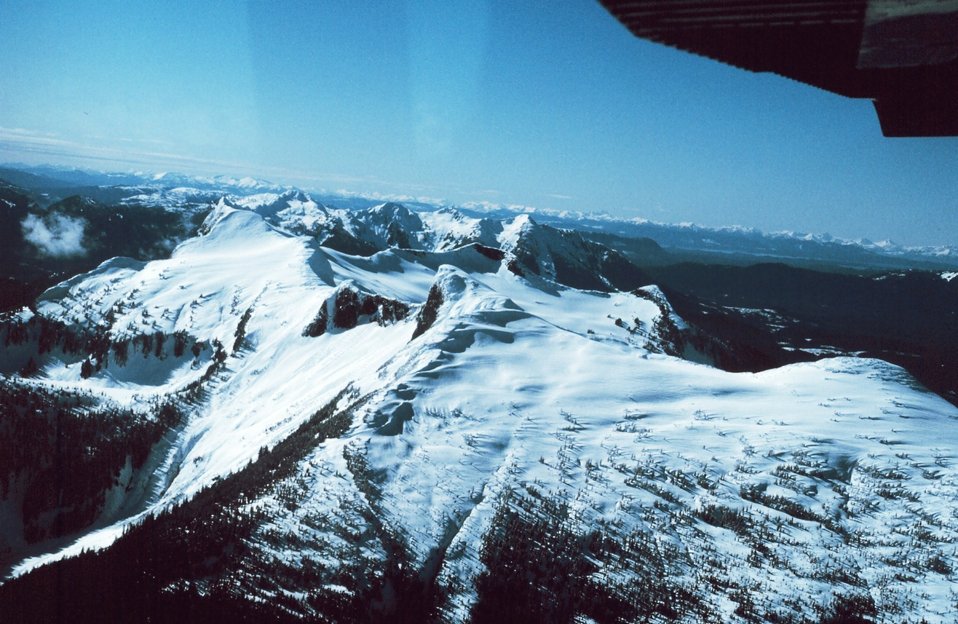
Mountain scenery enroute from Petersburg to Juneau